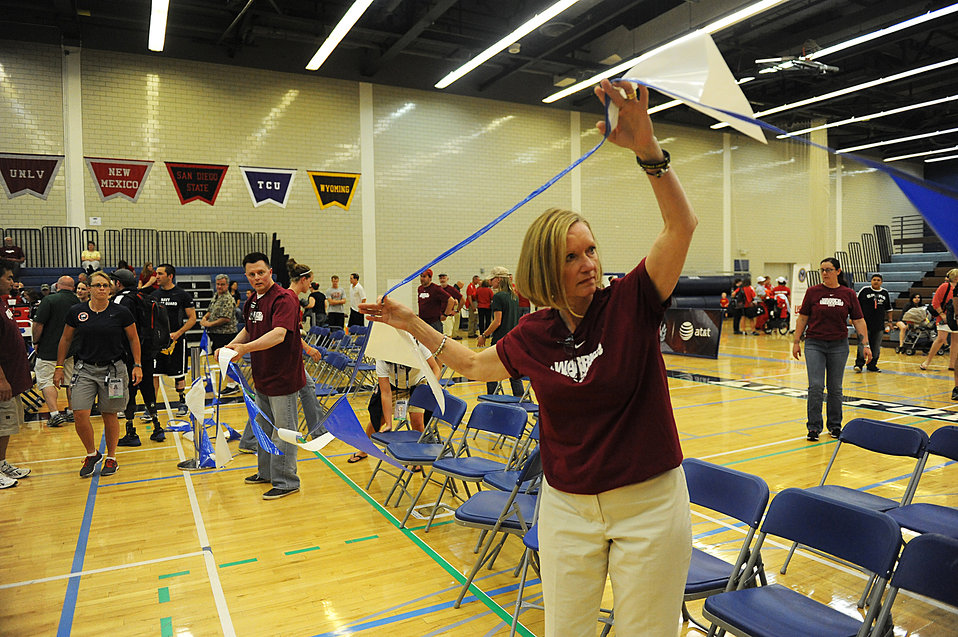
Warrior Games

Roslyn Riley, foreground, a volunteer, helps set up a barricade around the gymnasiun before a sitting volleyball game between the Air Force and the Special Operations Command teams during Warrior Games 2012 at the U.S. Air Force Academy in Colorado Springs, Colo., May 3, 2012.